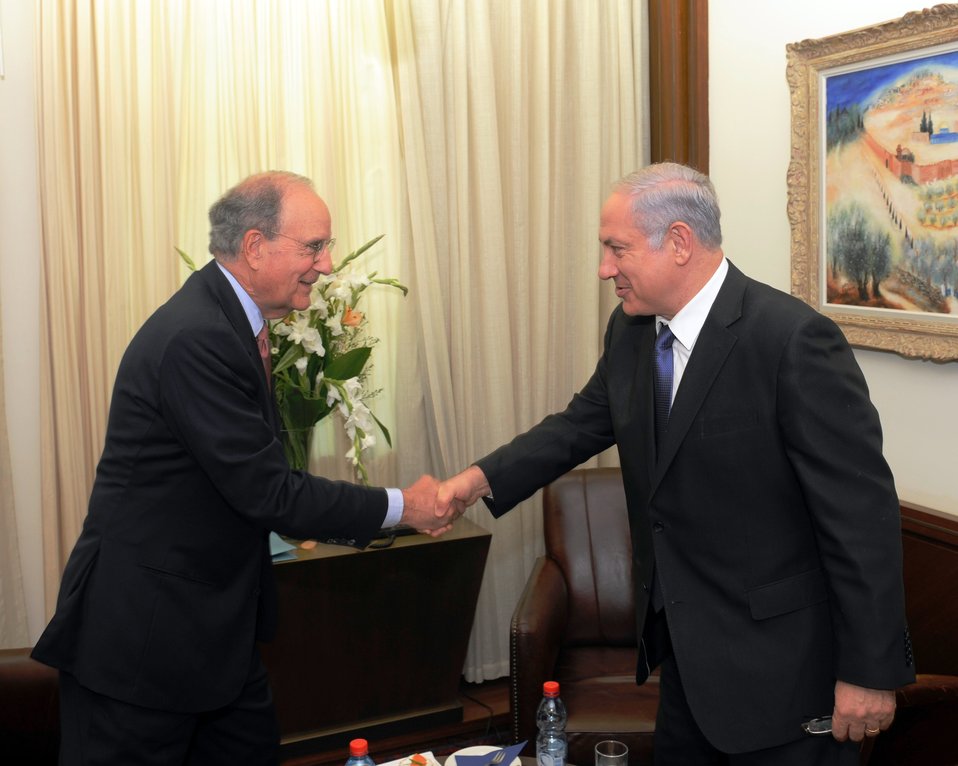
Special Envoy Mitchell Shakes Hands With Israeli Prime Minister Netanyahu

U.S. Special Envoy for Middle East Peace George Mitchell shakes hands with Israeli Prime Minister Benjamin Netanyahu at the Prime Minister's office in Jerusalem onJuly 16, 2010.